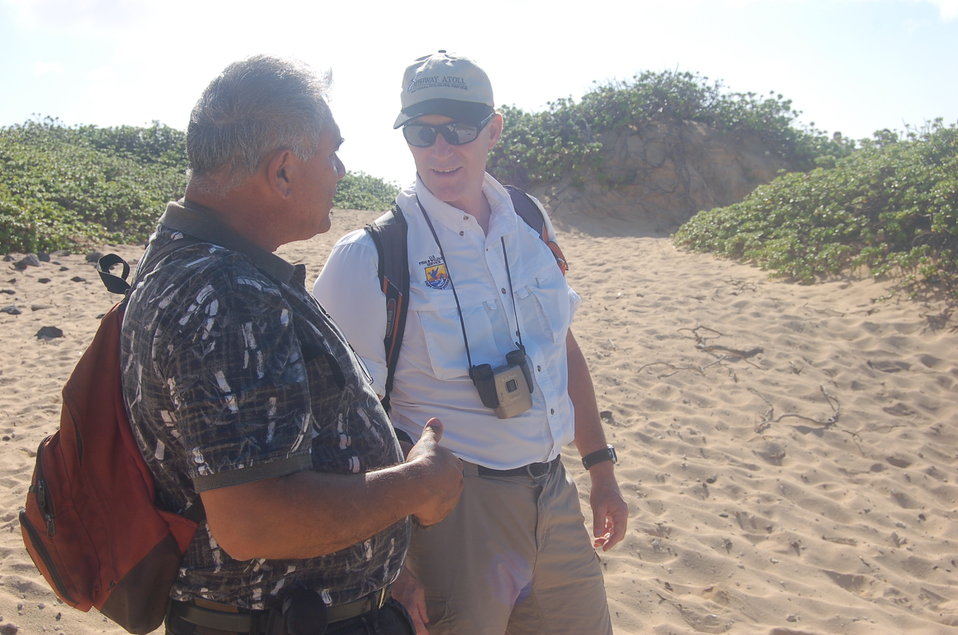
Dan Ashe tours Ka'ena Point State Park in Hawaii

Dan Ashe with Hawaii's State Director of the Department of Land and Natural Resources.